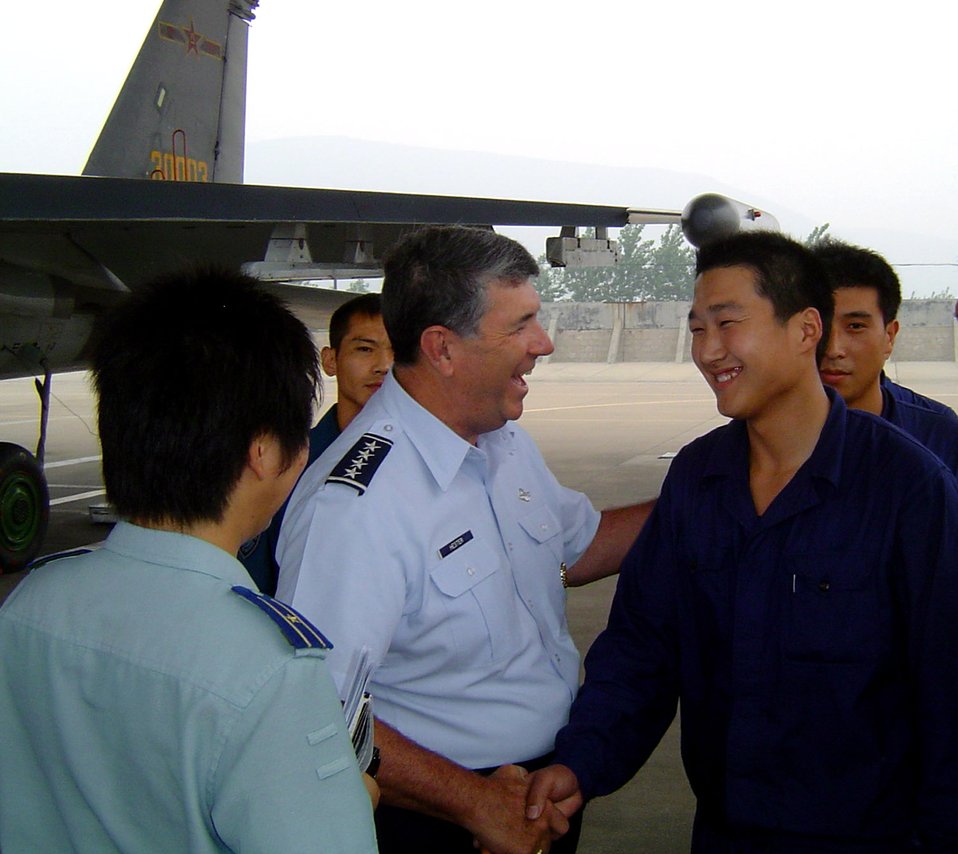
Chinese military hosts PACAF commander

Gen. Paul V. Hester talks to a Su-27 crew chief July 26 at Jining Air Base, China. General Hester is the commander of Pacific Air Forces.